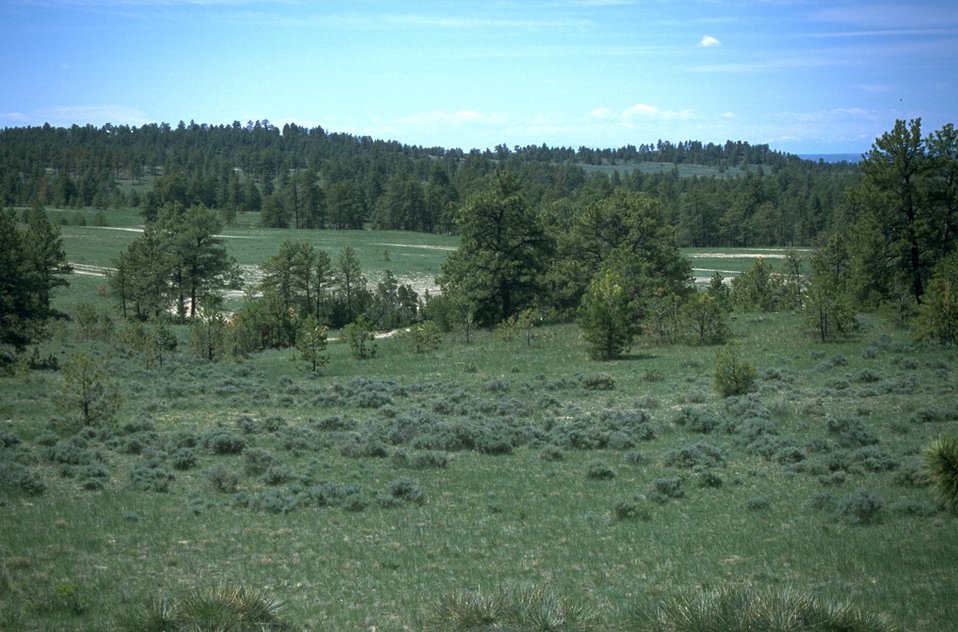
Ponderosa Pine and sagebrush on hill with OHV trails in the valley in the Shepherd Recreation Area